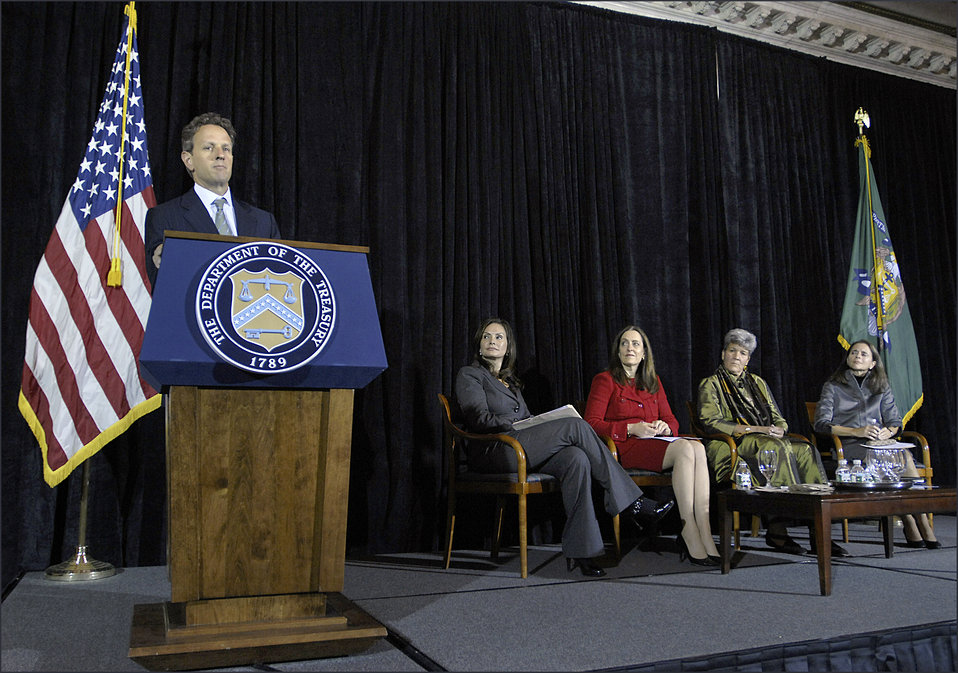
Inaugural Women in Finance Leadership Series, 10/19/10

Secretary Geithner delivered closing remarks for the inaugural Women in Finance Leadership Series and the dedication remarks for the opening of the Gallery of Women in Treasury.